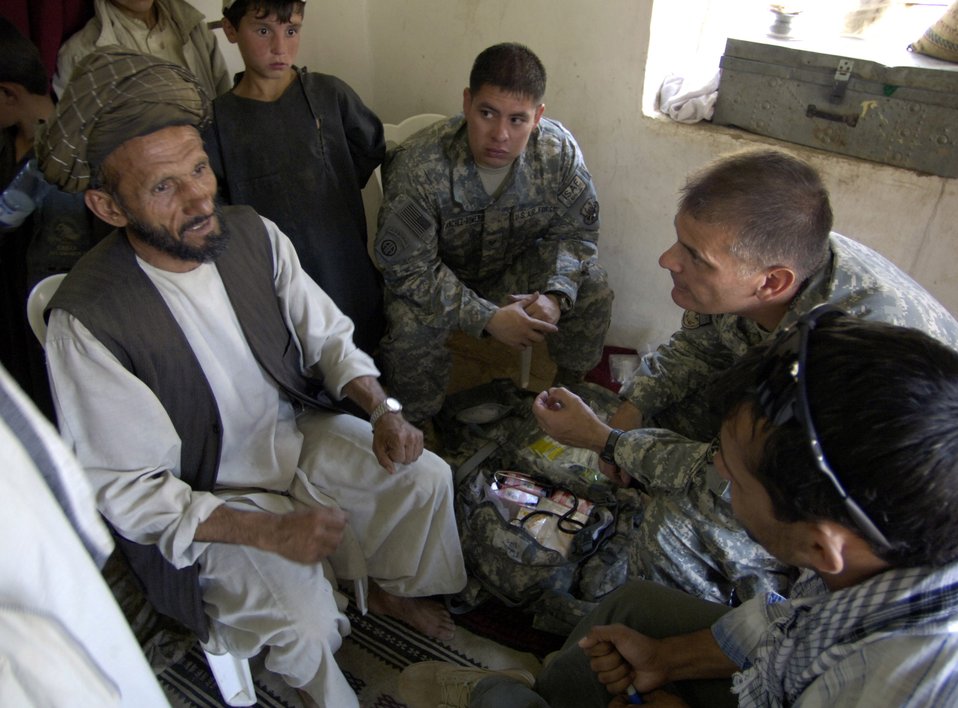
Airmen trek over mountains to deliver aid in Afghanistan

Panjshir Provincial Reconstruction Team members Capt. Kevin Kubly (second from right) and Staff Sgt. Andre Sanchez-Romero listen as a villager explains his health-related concerns to them through an interpreter Aug. 7 in Roydara village in the Shutol district of Panjshir province, Afghanistan. Captain Kubly is a physician's assistant deployed from the 3rd Medical Group at Elmendorf Air Force Base, Alaska. Sergeant Sanchez-Romero is a security forces member deployed from Minot AFB, N.D. They and their fellow PRT members made an 11-mile round-trip trek over a mountain pass and into a river valley to provide medical care to Afghans living in Roydara.